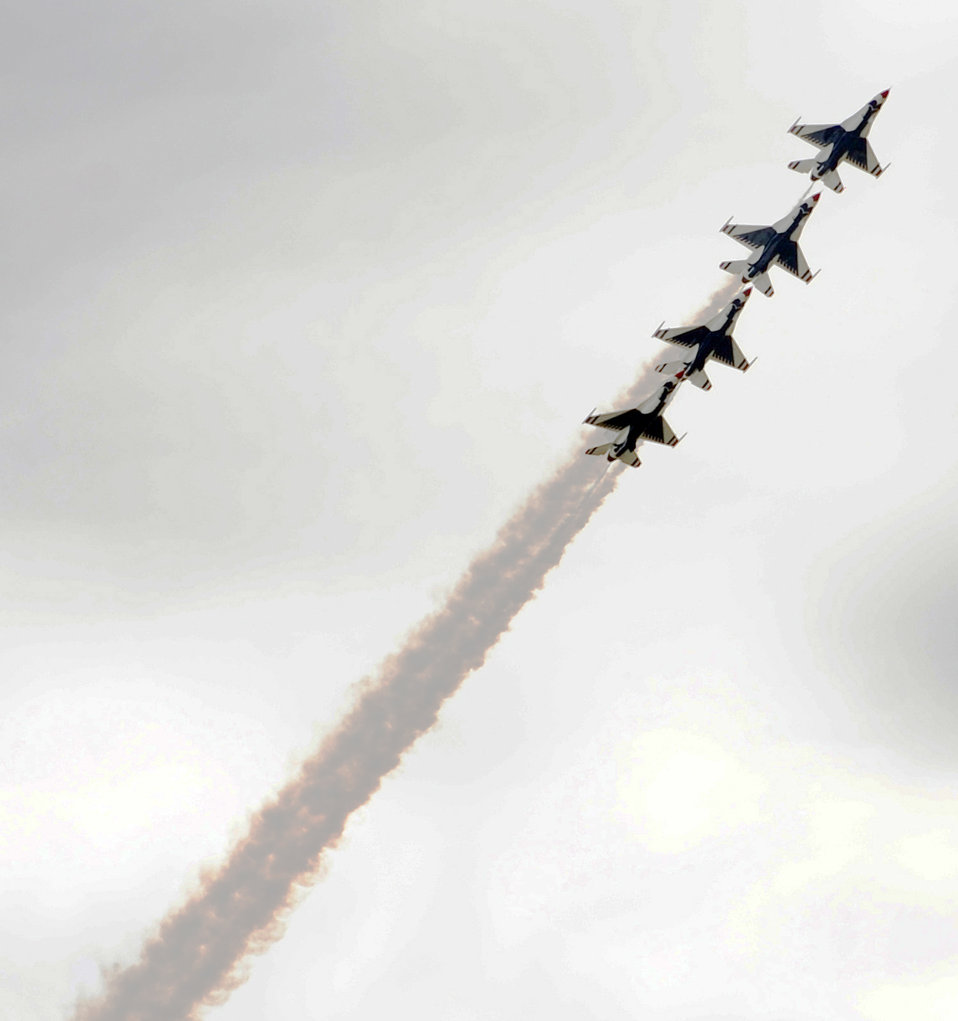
Thunderbirds at Dyess

The U.S. Air Force Thunderbirds perform aerial stunts for spectators during the Dyess Big Country Air Fest May 1, 2010, at Dyess Air Force Base, Texas.